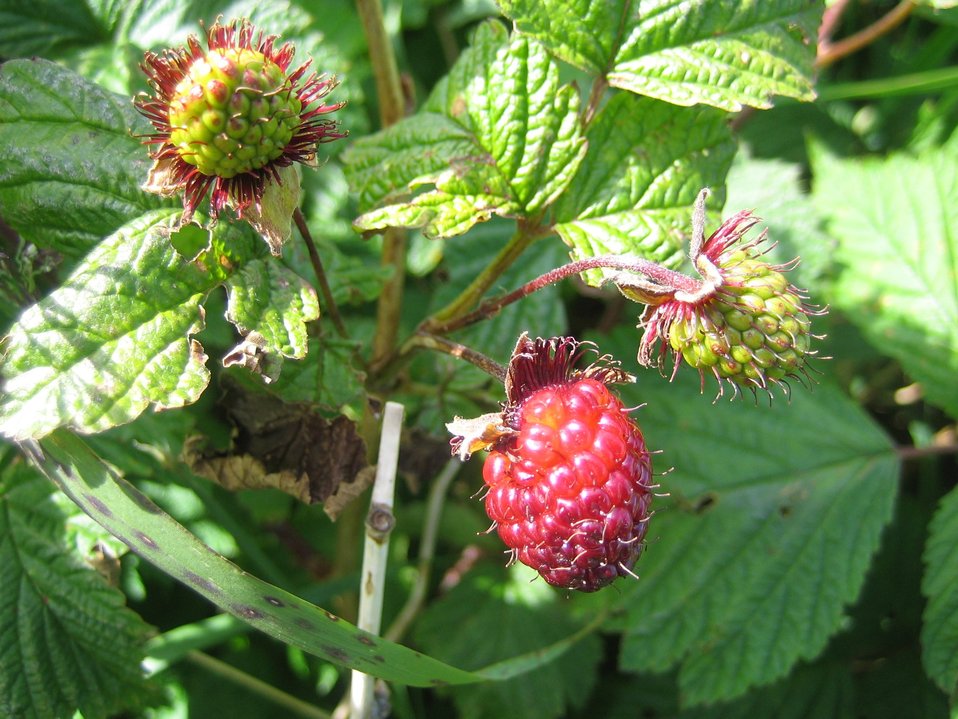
Salmonberry (Rubus spectabilis), an edible berry that is common in southern Alaska.